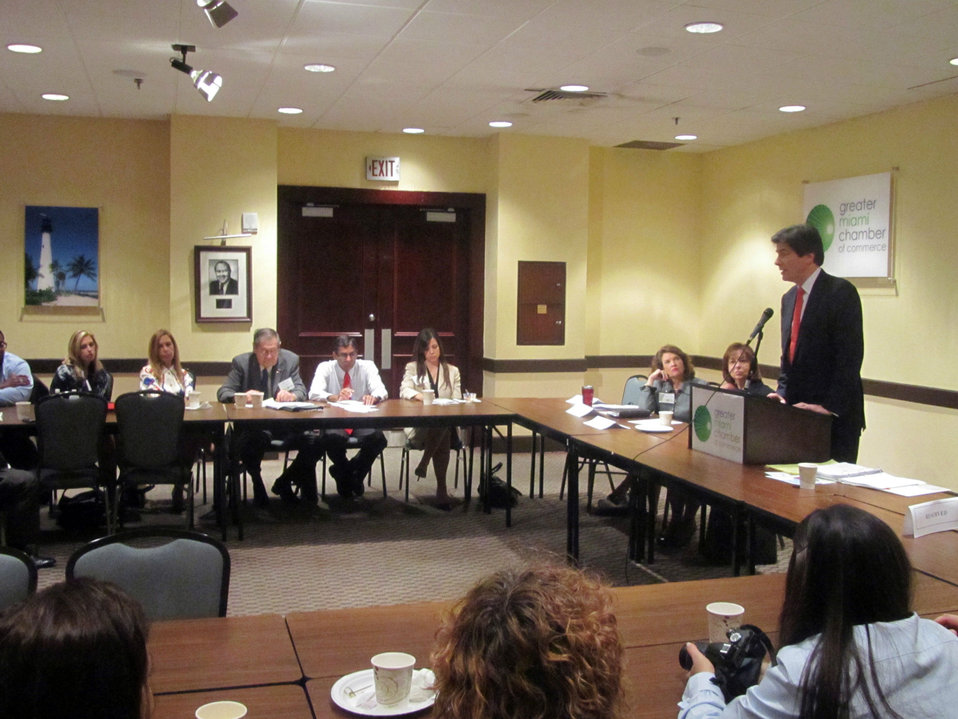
The Greater Miami Chamber of Commerce Hosts Assistant Secretary Fernandez

The Greater Miami Chamber of Commerce hosts Assistant Secretary of State for Economic and Business Affairs Jose W. Fernandez for a breakfast meeting in Miami, Florida, February 6, 2013. In his remarks, Assistant Secretary Fernandez highlights the economic and trade relations with the hemisphere and Miami's importance.